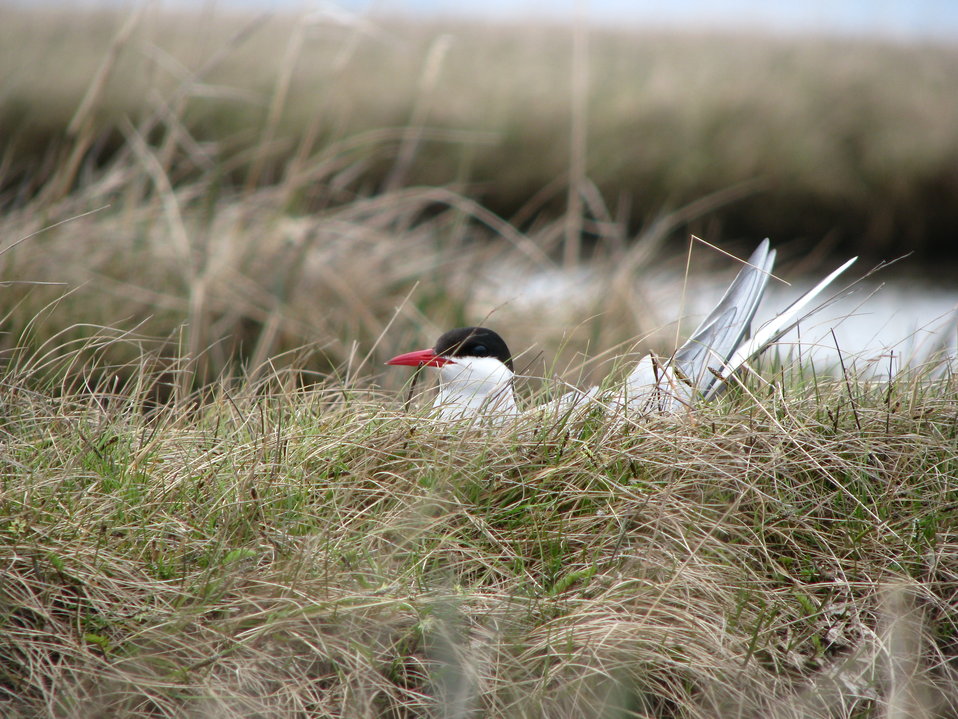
Arctic tern on nest

Yukon Delta NWR